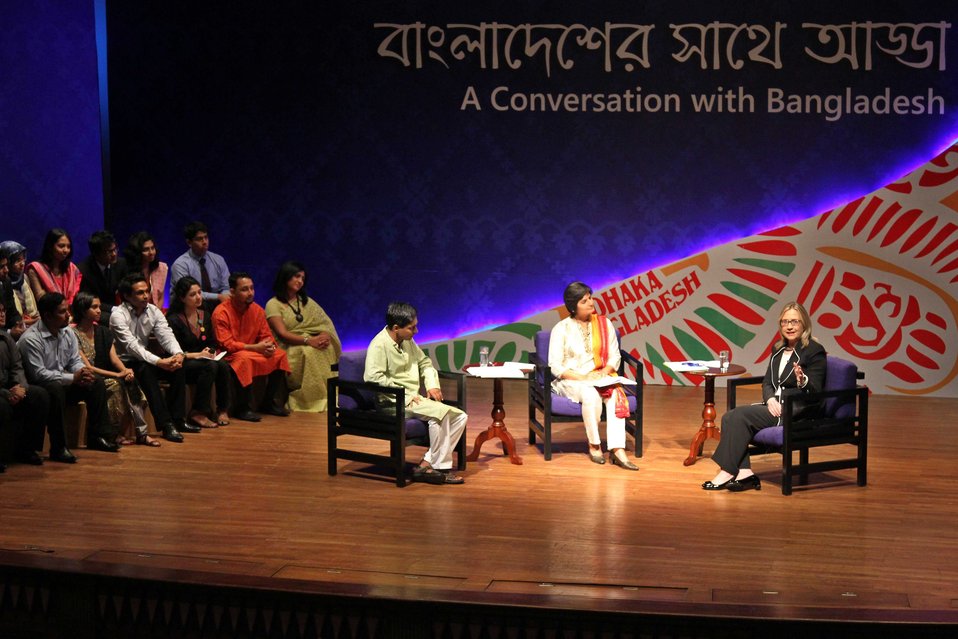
Secretary Clinton Participates in a Townterview With Bangladeshi Youth

U.S. Secretary of State Hillary Rodham Clinton participates in a townterview with Bangladeshi youth moderated by Ejaj Ahmad, Founder and President of Bangladesh Youth Leadership Center, and Munni Saha, Head of News at ATN News, in Dhaka, Bangladesh, on May 6, 2012. Also featured in the photo are members of the Ambassador's Youth Council.